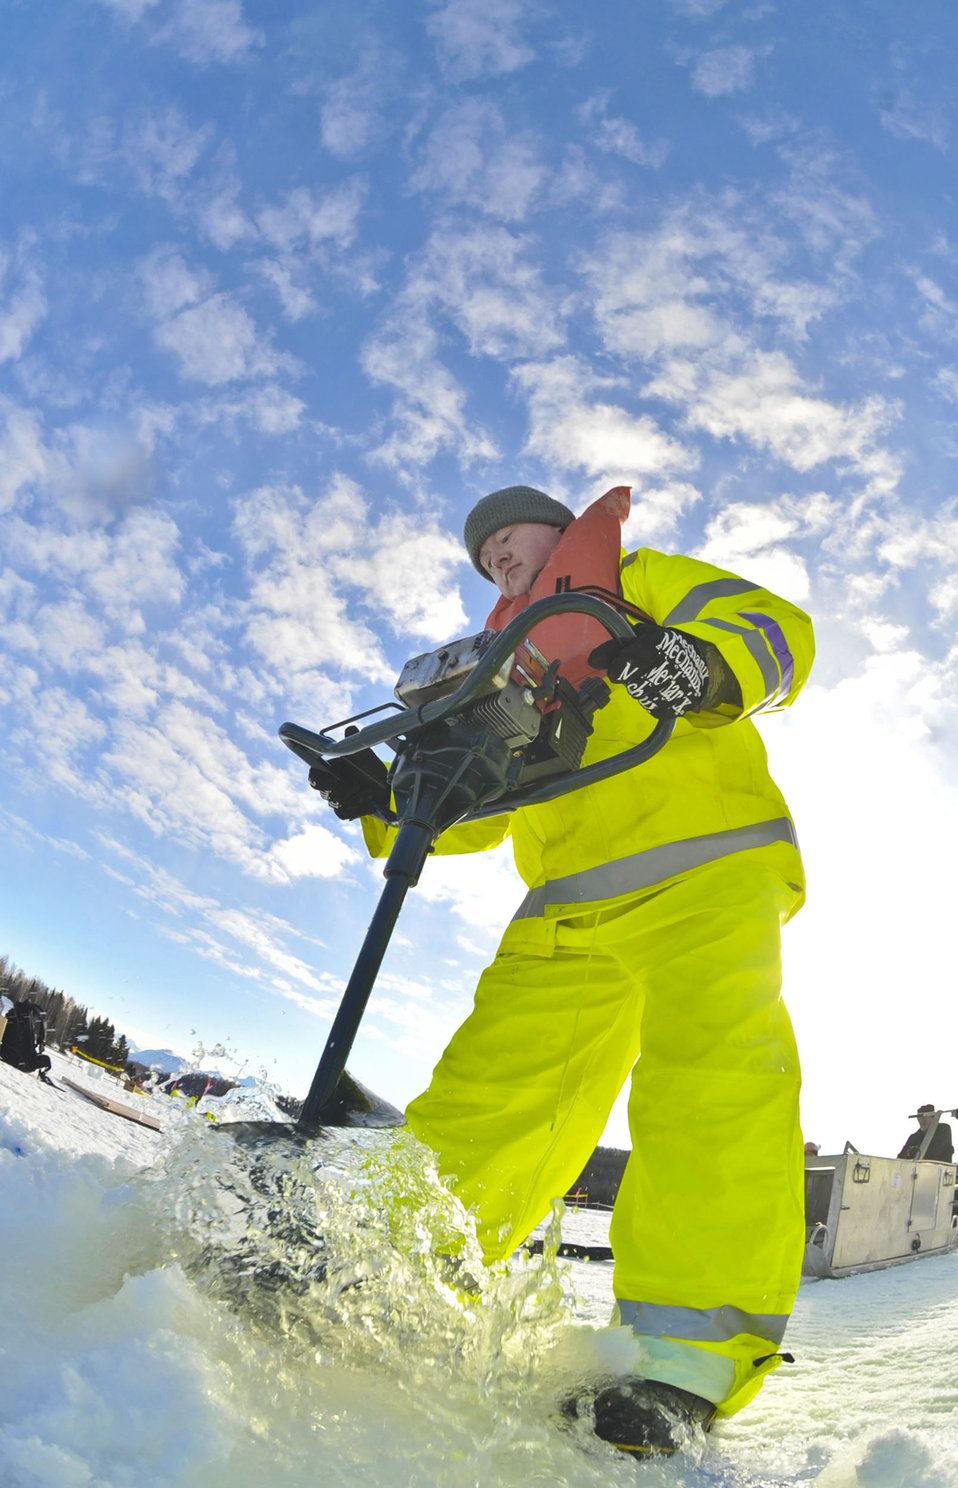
Environmental recovery practice

Tech. Sgt. William Stewart drills through the ice with an auger Feb. 24, 2010, at Six-Mile Lake at Elmendorf Air Force Base, Alaska, during Ice Ops 2010. Members from the 611th Civil Engineer Squadron, Coast Guardsmen and the Navy's Supervisor of Salvage practiced techniques designed for surface and under-ice spills. Sergeant Stewart is with the 611th CES.